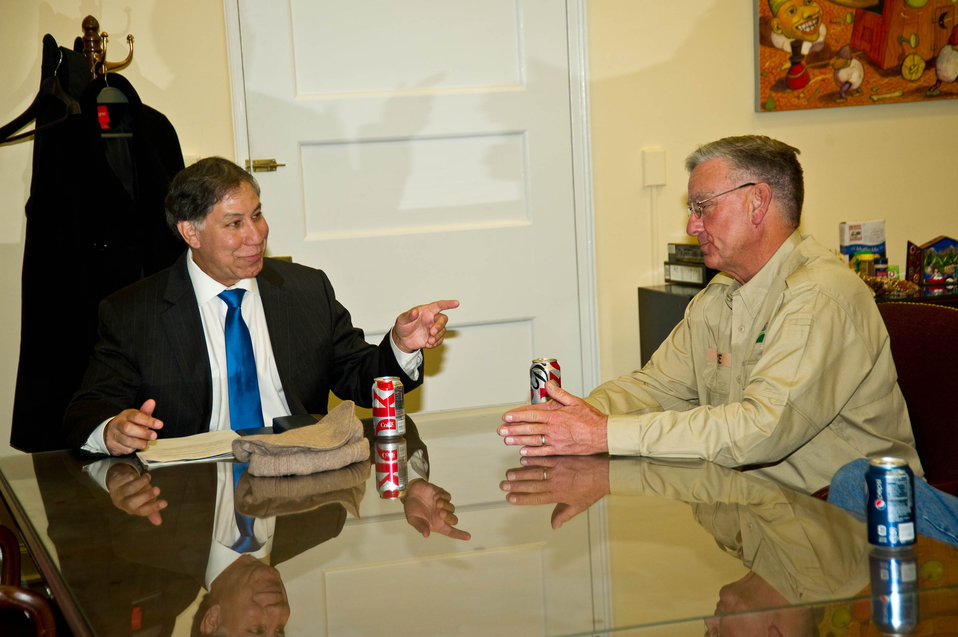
Agriculture Under Secretary for Marketing and Regulatory Programs (MRP) Edward Avalos meets with U.S. Department of Agriculture (USDA) Animal and Plant Health Inspection Service (APHIS) Wildlife Service Biologist New Mexico district supervisor Keel Price after his return from Afghanistan on Tuesday, Mar. 19, 2013.